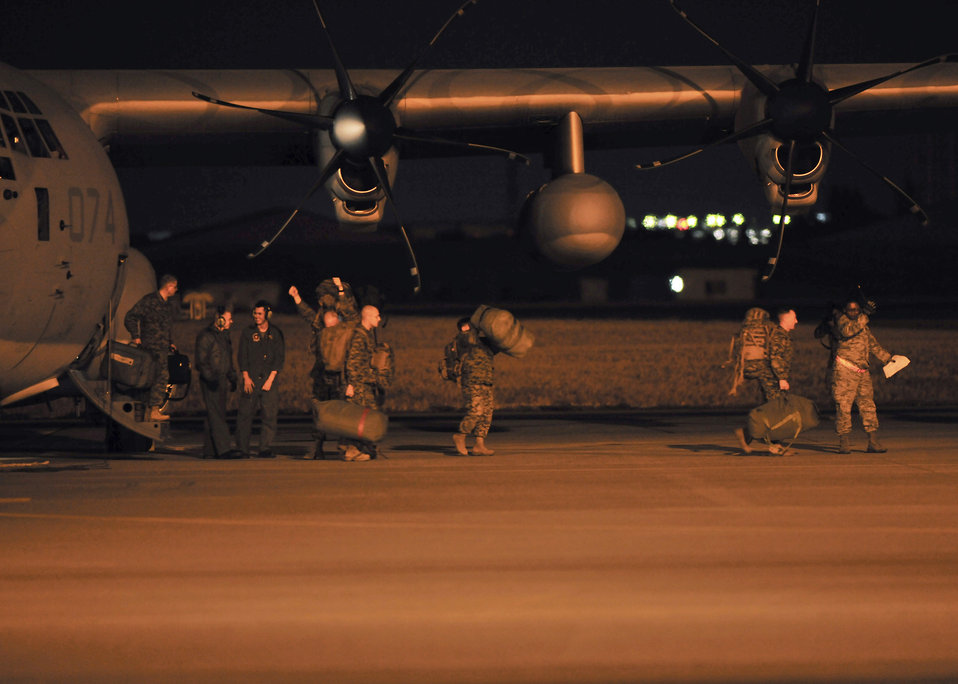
Staging relief

YOKOTA AIR BASE, Japan -- The first wave of American disaster relief forces exits a C-130 Hercules aircraft here March 12. They are here to assist with Japan's earthquake and tsunami recovery effort.